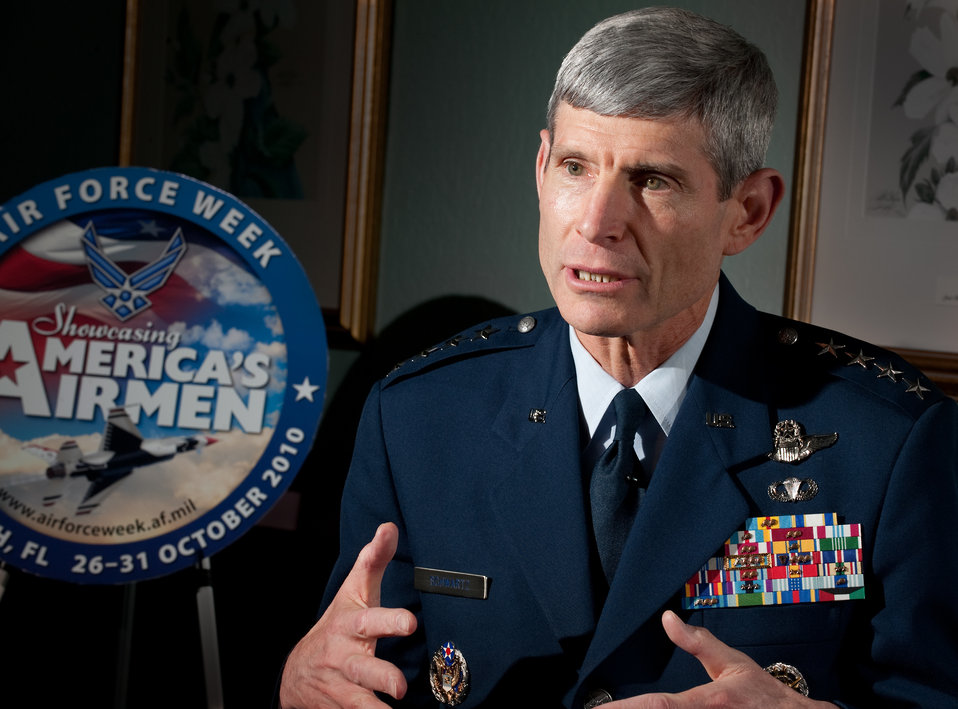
CSAF honors hometown heroes at Air Force Week

Air Force Chief of Staff Gen. Norton Schwartz discusses Air Force Week Cocoa Beach 2010 during an interview in Cocoa Beach, Fla., on Oct. 29, 2010.